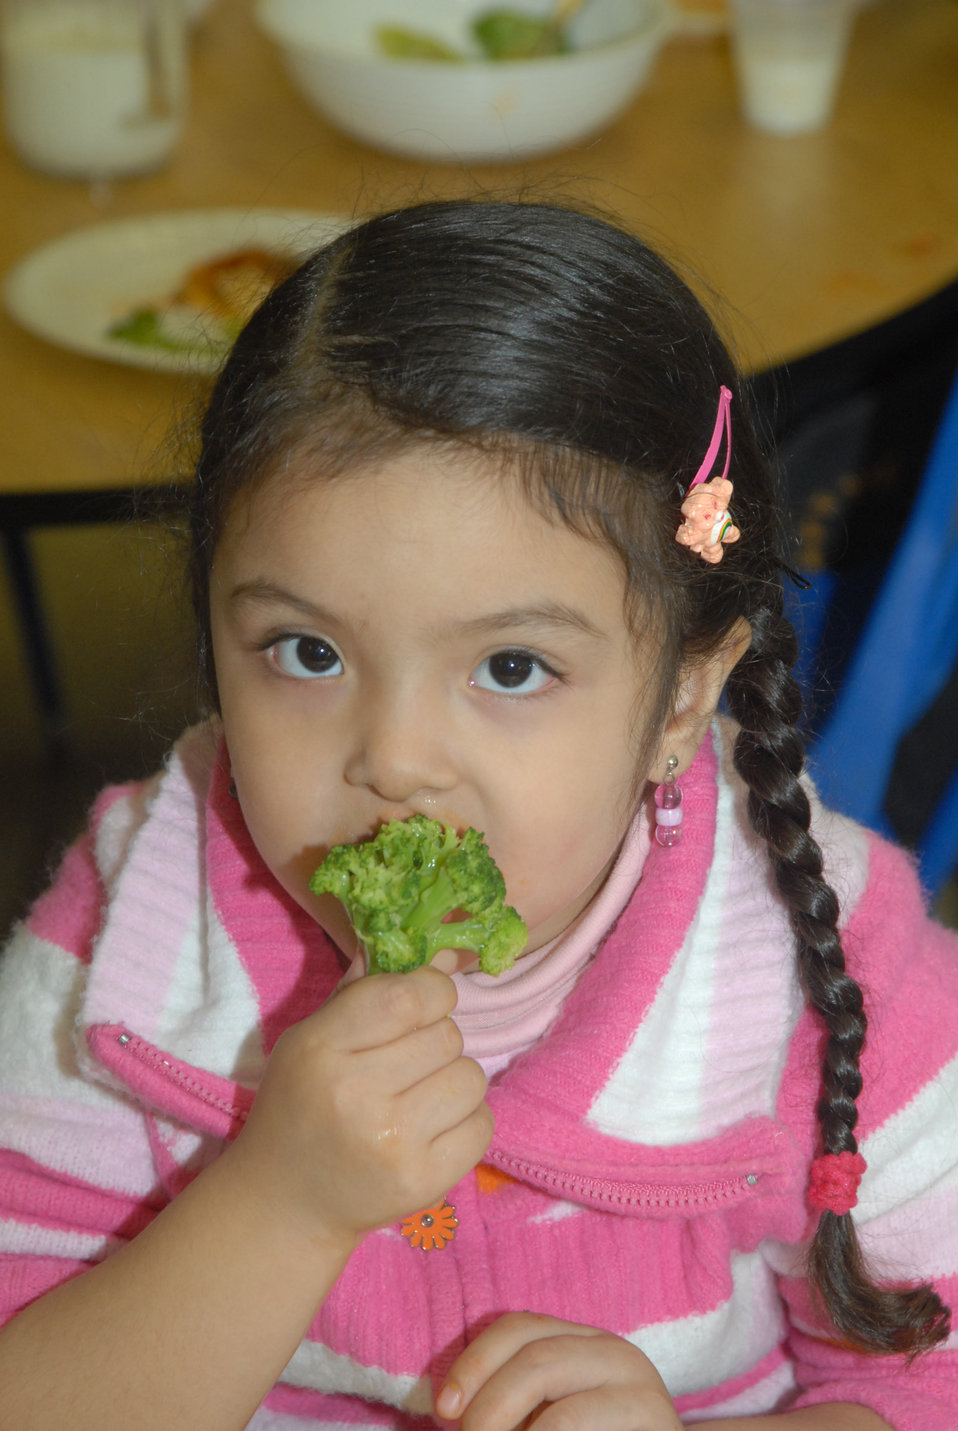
Youngsters at the Higher Horizons Day Care Center in Bailey Crossroads, VA., receive healthy food and snacks on October 25, 2006 under the U.S. Department of Agriculture (USDA) Food Nutrition Service’s (FNS) Child and Adult Care Food Program (CACFP) and Head Start program. CACFP plays a vital role in improving the quality of day care for children and elderly adults by making care more affordable for many low-income families. Each day, 3.2 million children receive nutritious meals and snacks through CACFP.